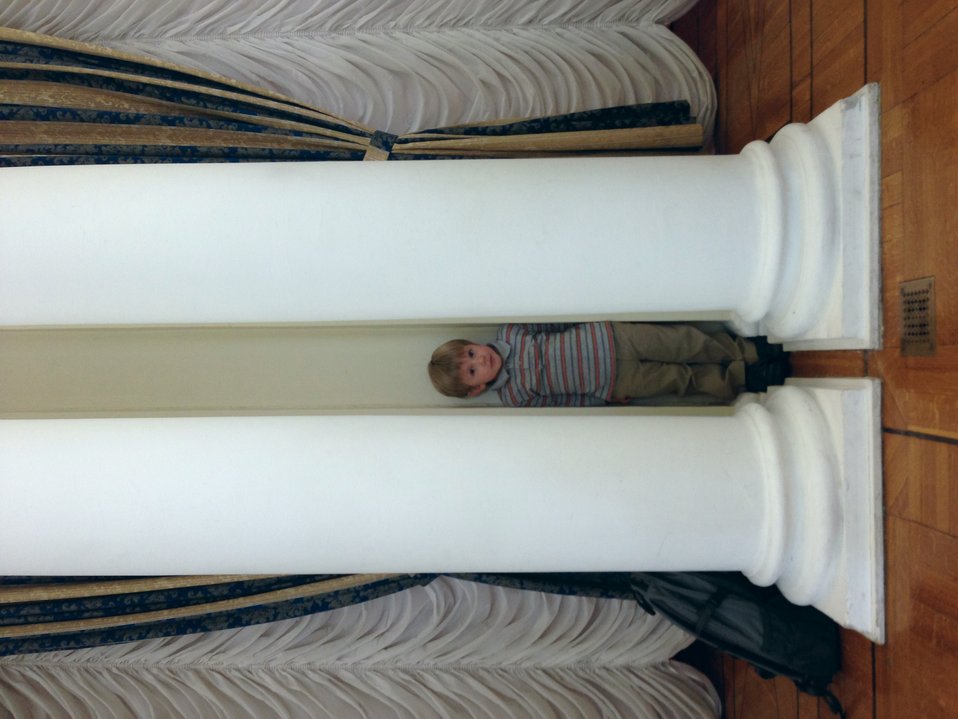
Embassy Moscow Personnel and Families Greet Secretary Kerry

Teodor Pitner, 3, the son of Embassy Moscow Attaches Terry and Aleksandra Pitner, finds a quiet spot at the Spaso House in Moscow, Russia, as U.S. Secretary of State John Kerry greeted embassy employees on May 8, 2013.